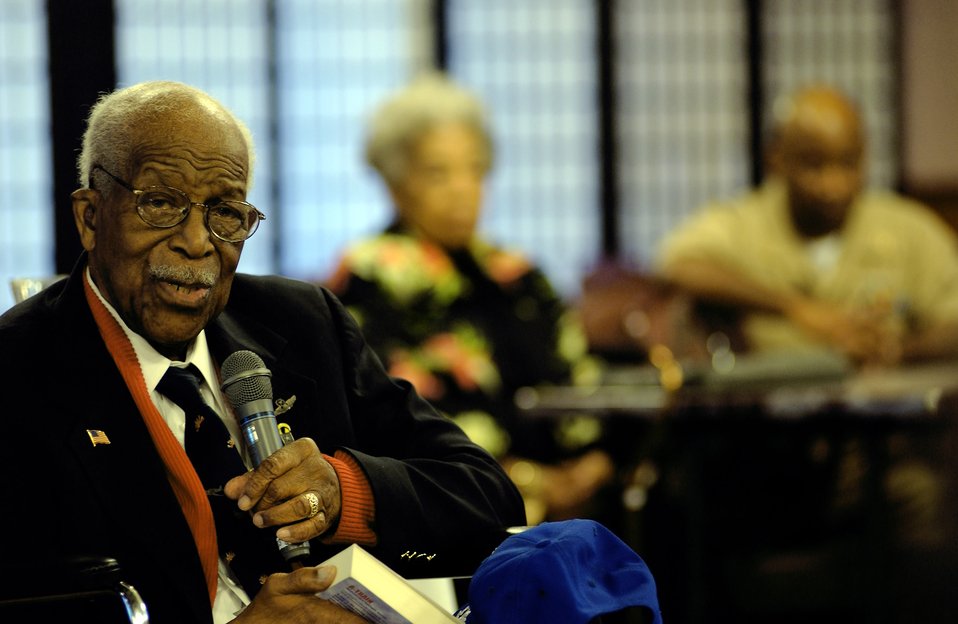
Tuskegee Airman dies

Retired Lt. Col. Charles W. Dryden speaks to Airmen at Kadena Air Base, Japan, during a tour of U.S. military bases in Asia Feb. 26.